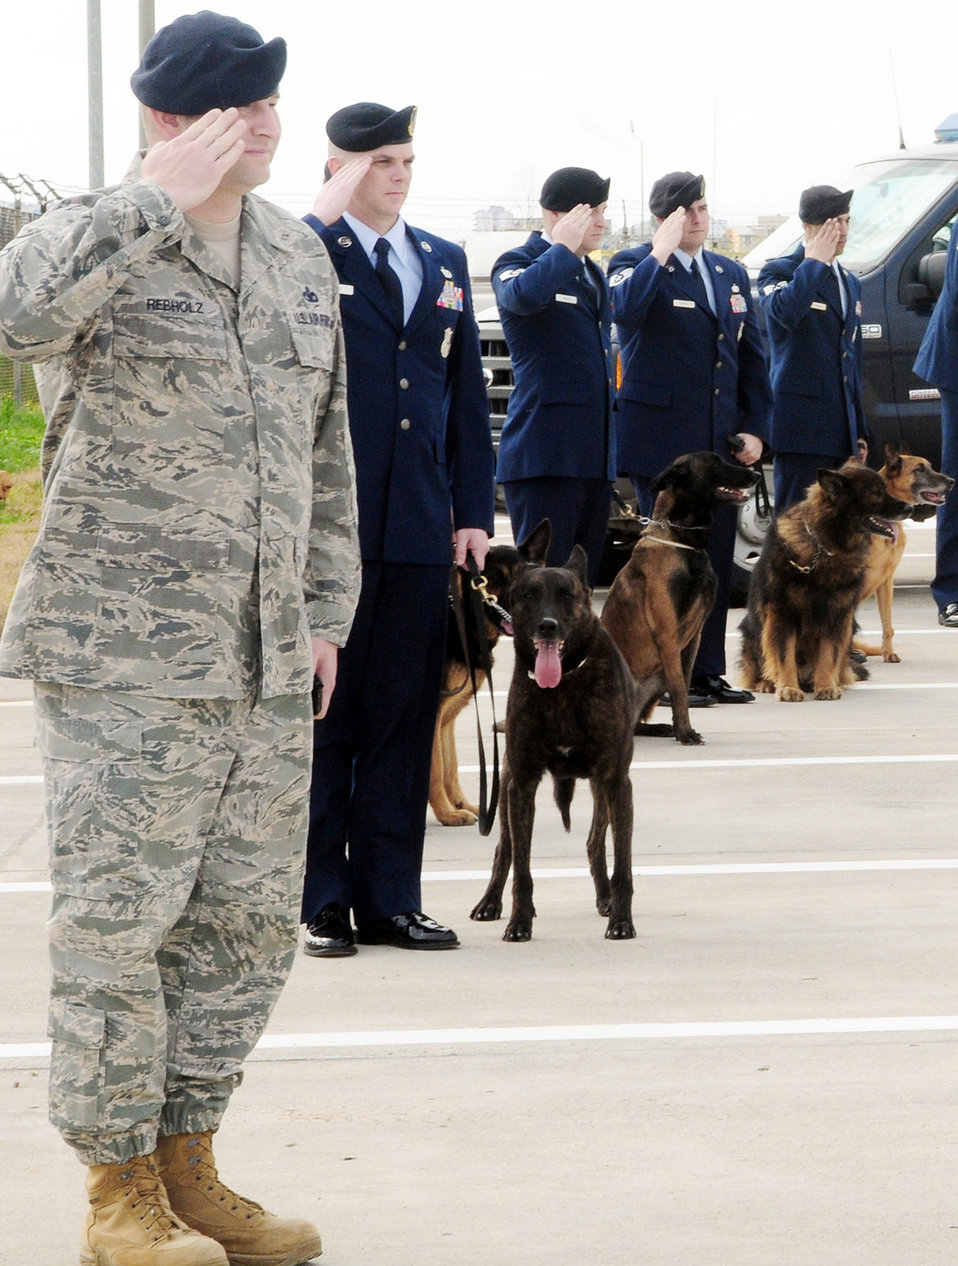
K-9 remembrance

Military working dog handlers and their dogs from the 39th Security Forces Squadron salute during a memorial service in honor of Ronnie, a fallen military working dog, Feb. 25, 2010, at Incirlik Air Base, Turkey. During the ceremony, Ronnie received an Air Force Commendation Medal for his service, and speakers took turns sharing their experiences with the memorable canine.